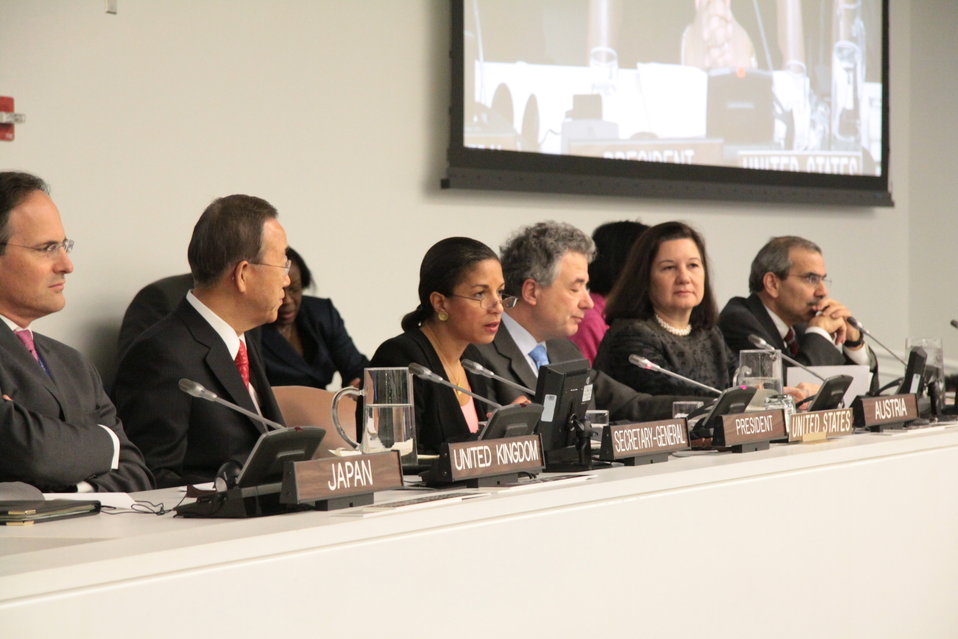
Secretary General Ban Ki-moon and Ambassador Rice Listen to Young People

UN Secretary General Ban Ki-moon, second from left, and U.S. Special Representative to the United Nations Susan Rice, third from left, listen to a video of a young person expressing her opinion of what should be on the agenda of the UN Security Council during the special event, Voices of a New Generation, at the United Nations in New York, New York, on December 21, 2010.